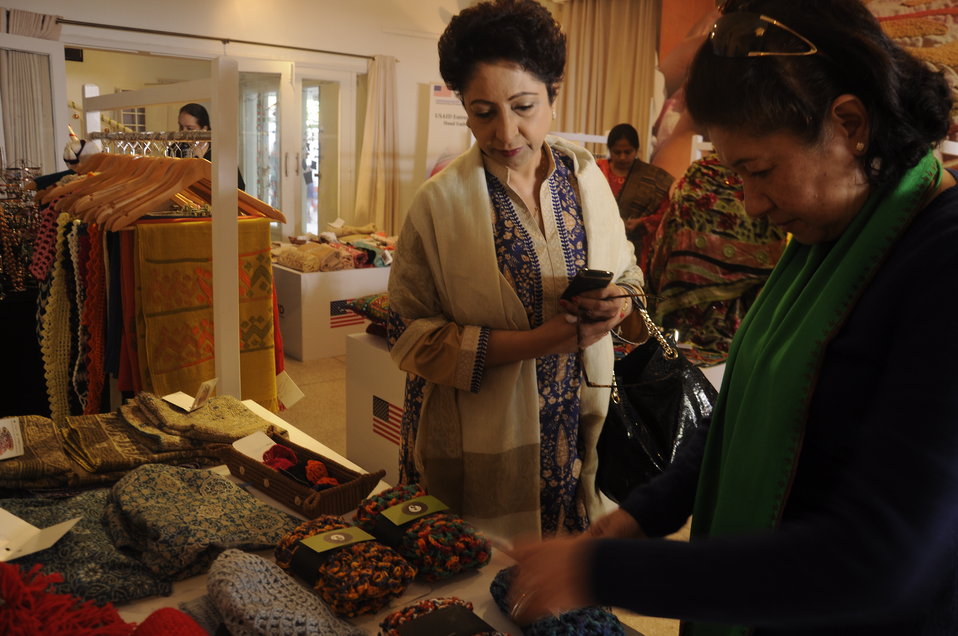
Dr. Maliha Lohdi, 17th Pakistan Ambassador to the United States, showing interest at the Stitching and Chai Exhibition organized by the USAID's Entrepreneurs Project